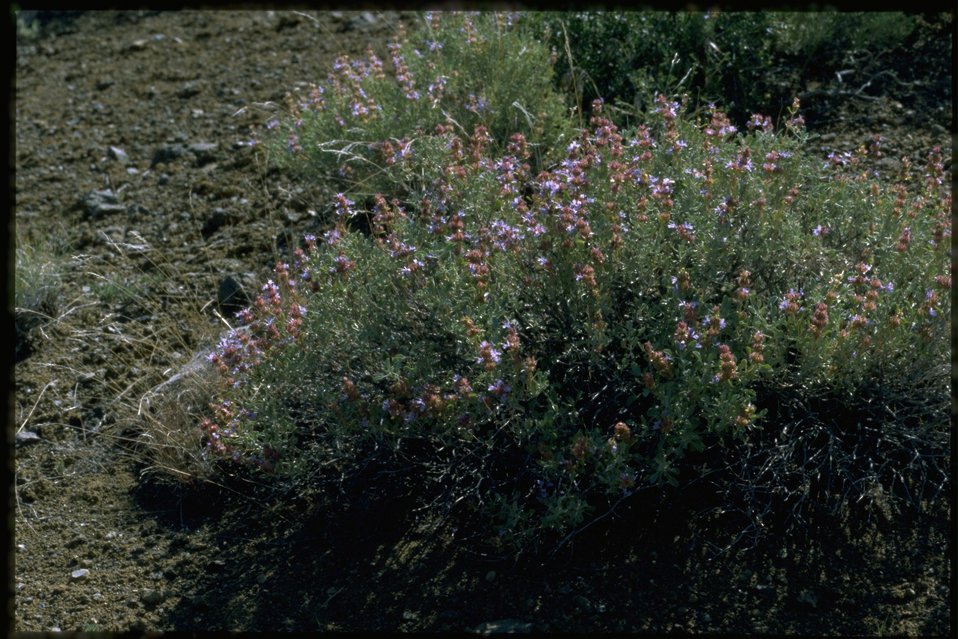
Farshot of Trifolium.